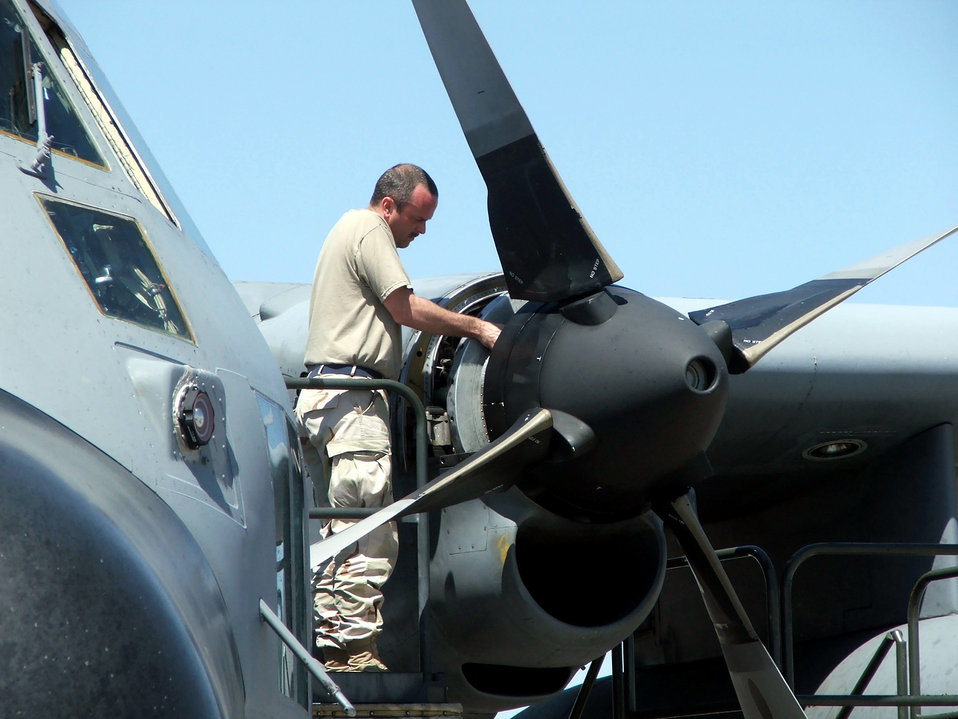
Checkin' before changin'

KARSHI-KHANABAD AIR BASE, Uzbekistan -- Tech. Sgt. Brian Whitt works on a C-130 Hercules engine as he and other maintainers prepare to do a propeller change here April 16. He is a C-130 engine mechanic with the 774th Expeditionary Airlift Squadron and is deployed from the Delaware Air National Guard at New Castle.